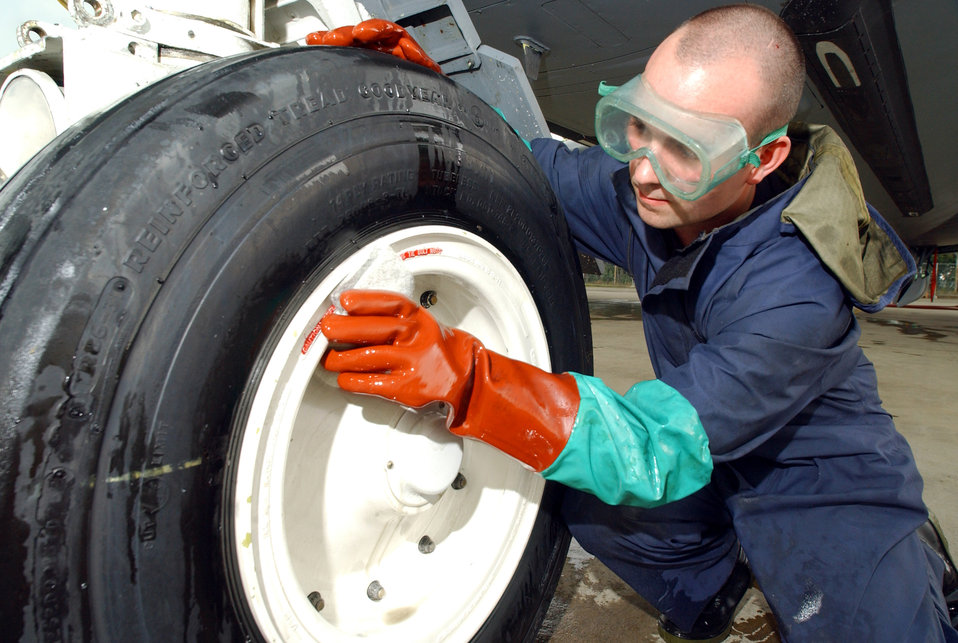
Tire cleaning

ROYAL AIR FORCE FAIRFORD, England -- Senior Airman John Golightly washes the nose tires of a KC-135 Stratotanker here May 20. KC-135 aircraft are washed and re-lubricated every 90 days. Airman Golightly is a member of the 100th Aircraft Maintenance Squadron at Royal Air Force Mildenhall, England.